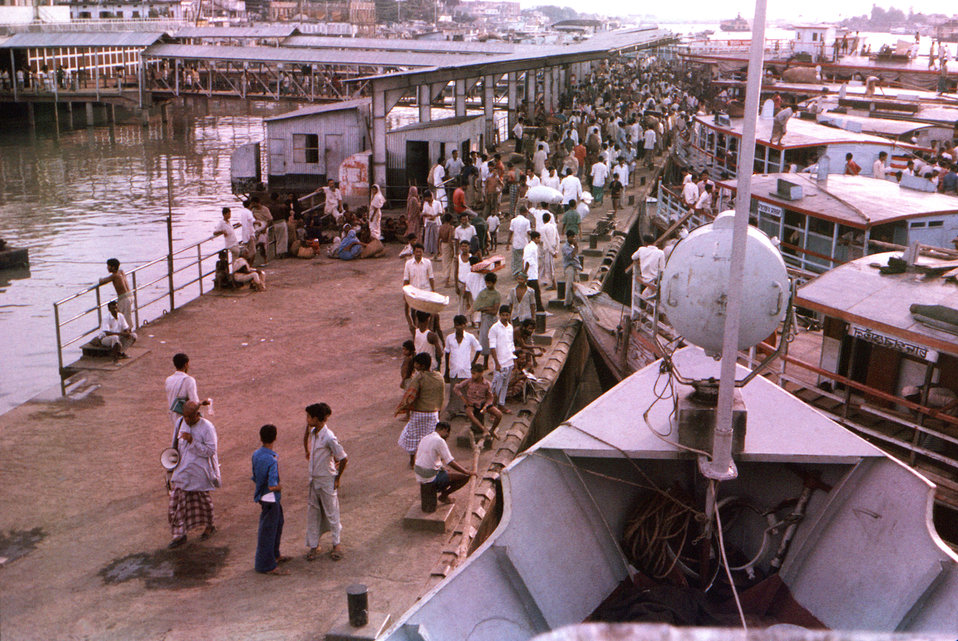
This was another view depicting the hustle bustle of the Dhaka harbor Sader Ghat ferry terminal,, Bangladesh, on the Buriganga River, in September, 1975.